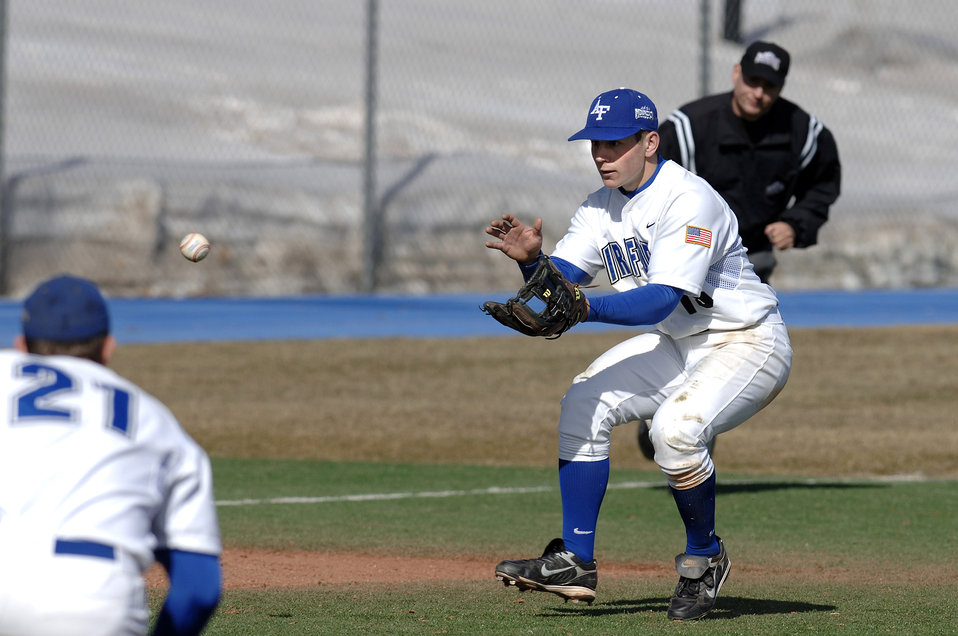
Falcons fall to Northern Colorado

Freshman cadet Ben Ausbun fields a grounder during a game against the Northern Colorado Bears. He is the 3rd baseman for the Air Force Academy Men Falcons baseball team. The Bears swept the three game weekend series from the Falcons.